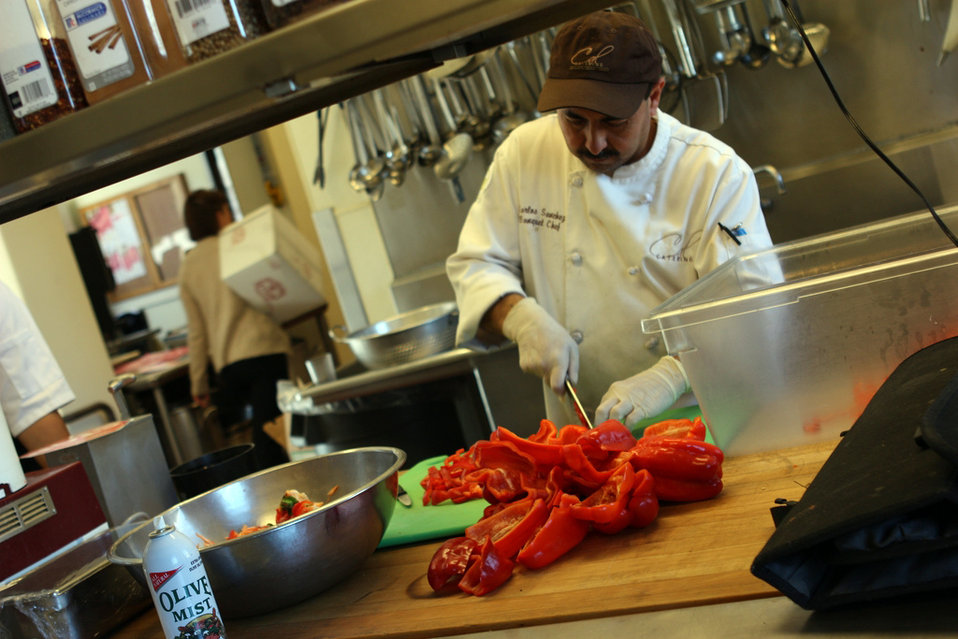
November 15, 2012, The Right Cut

Maximizing money saved also comes with solid knife skills. Another creative way kitchens can reduce waste.

UC Berkeley now wastes 1,000 pounds less per week, starting with source reduction. Elimination of trays in the dining halls is also cutting back on food waste.

More about the Food Recovery Challenge

Reduce waste at home!